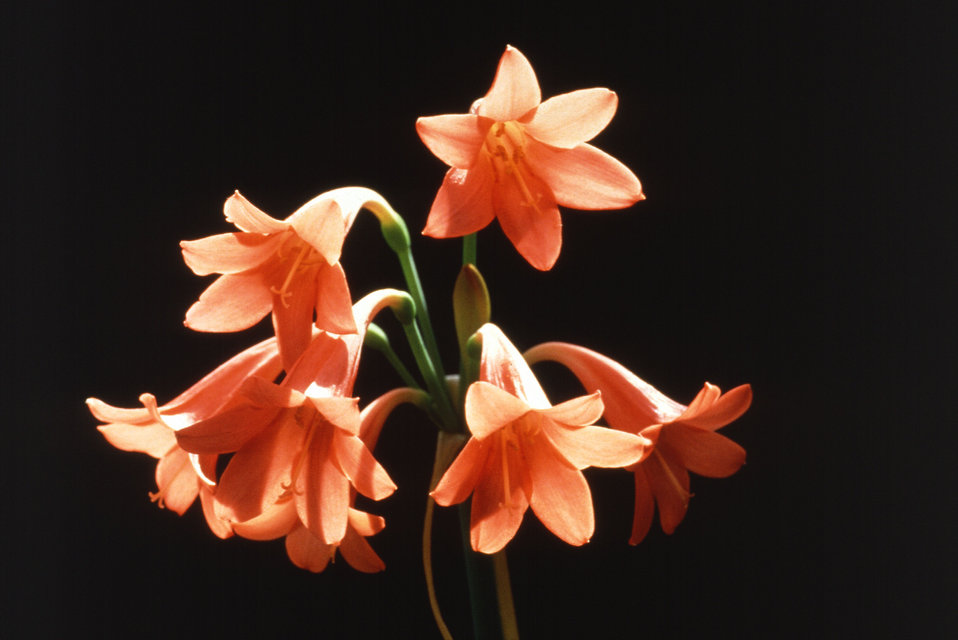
The fire lily (Cyrtanthus hybrid) blooms from late summer through fall with pink, white, yellow, red and orange blossoms and prefers light shade and moist, well-drained soil.